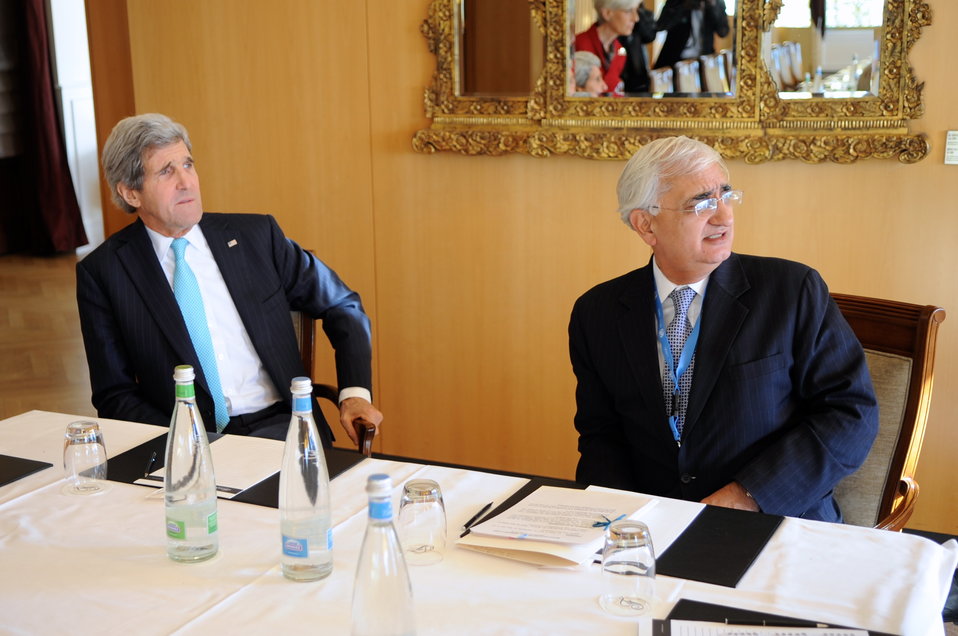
Secretary Kerry, Indian Foreign Minister Khurshid Enjoy Alpine View

U.S. Secretary of State John Kerry and Indian Foreign Minister Salman Khurshid enjoy a look at the French Alps before the start of a one-on-one meeting during a break in the Geneva II conference in Montreux, Switzerland, on January 22, 2014.